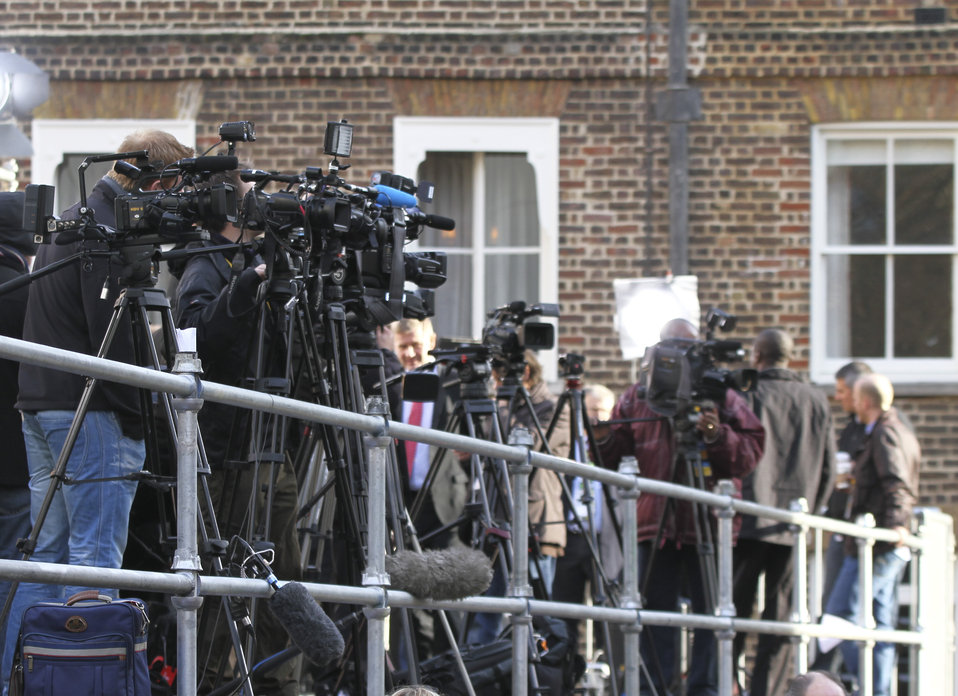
Behind the Scenes: Photographers at the London Conference on Somalia

Behind the Scenes: Photographers take photos of heads of state and foreign ministers from over 50 countries, as well as representatives of the United Nations and the African Union, at the London Conference on Somalia, hosted by UK Prime Minister David Cameron, on February 23, 2012.